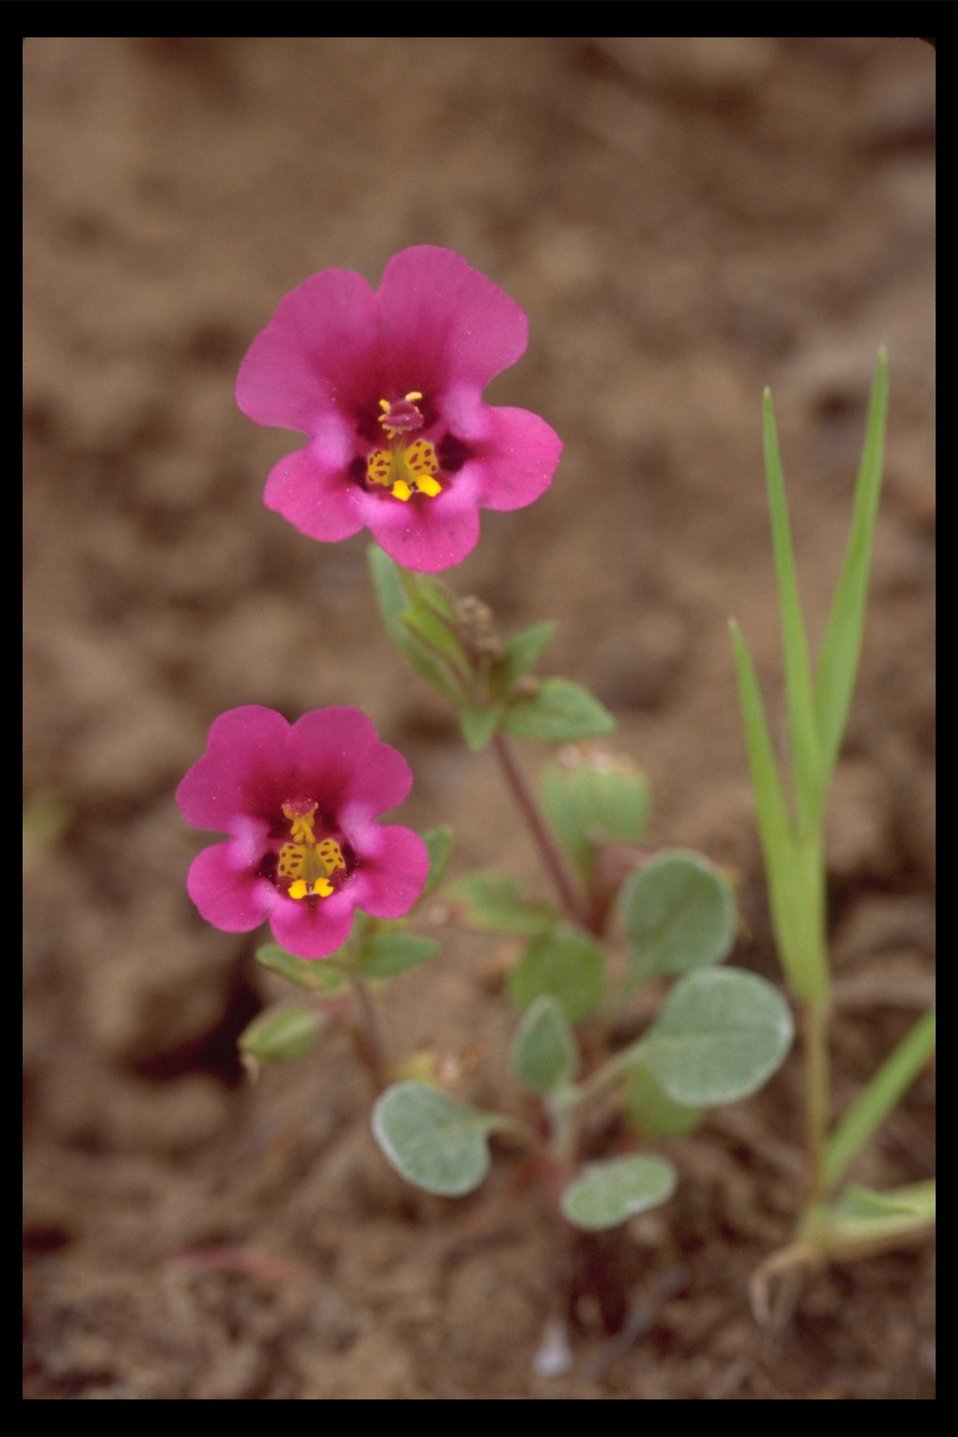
Kellogg's Monkey Flower (Mimulus kelloggii) near Lost Creek Lake.